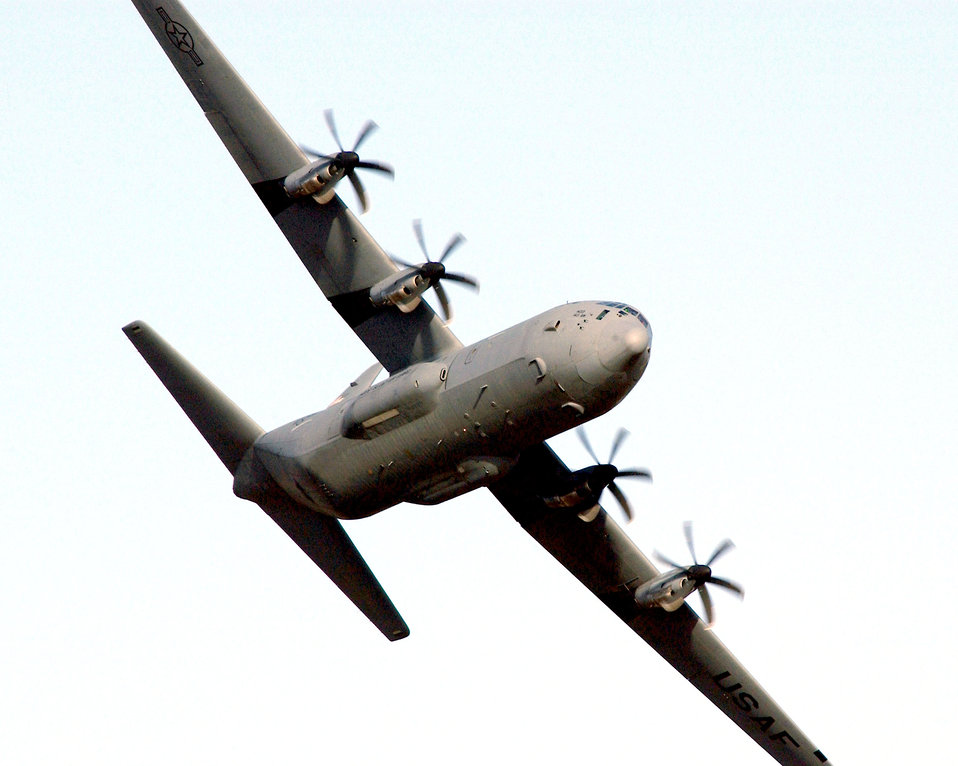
C-130J testers accomplish first five-bundle sequential airdrop

EDWARDS AIR FORCE BASE, Calif. -- A J-model C-130 Hercules flies over a range here recently. Developmental test and evaluation on the model came to a head when testers successfully completed the first five-bundle sequential low velocity airdrop.